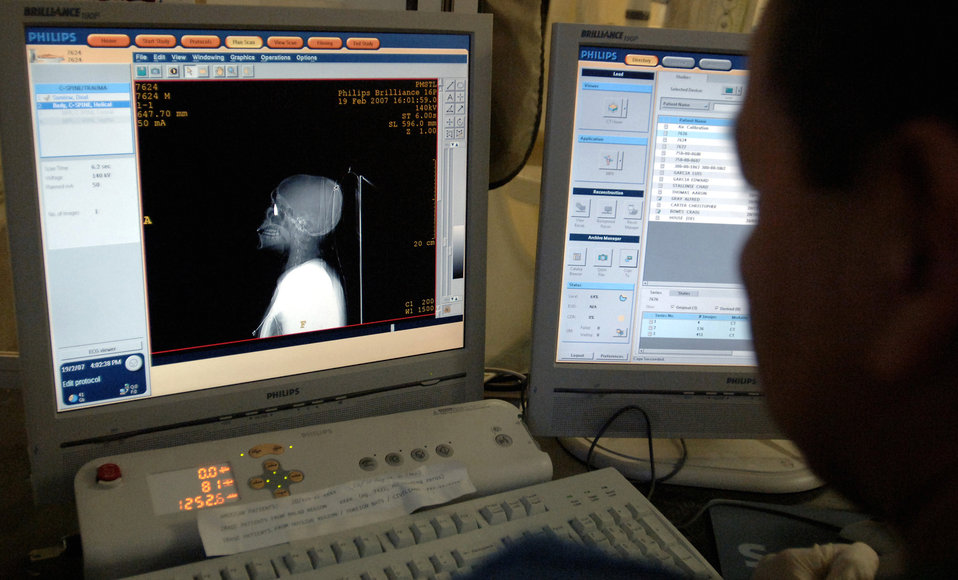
Radiology staff provides reliable, rapid response in Iraq

Staff Sgt. Orlando Martinez scans a patient on a CT scan machine at the Air Force Theater Hospital Feb. 19 at Balad Air Base, Iraq. The radiology staff has two new 16 slice CT scanners that expedite the process from 90 minutes to about 10 minutes. Sergeant Martinez is a diagnostic imaging specialist assigned to the 332nd Expeditionary Medical Group.